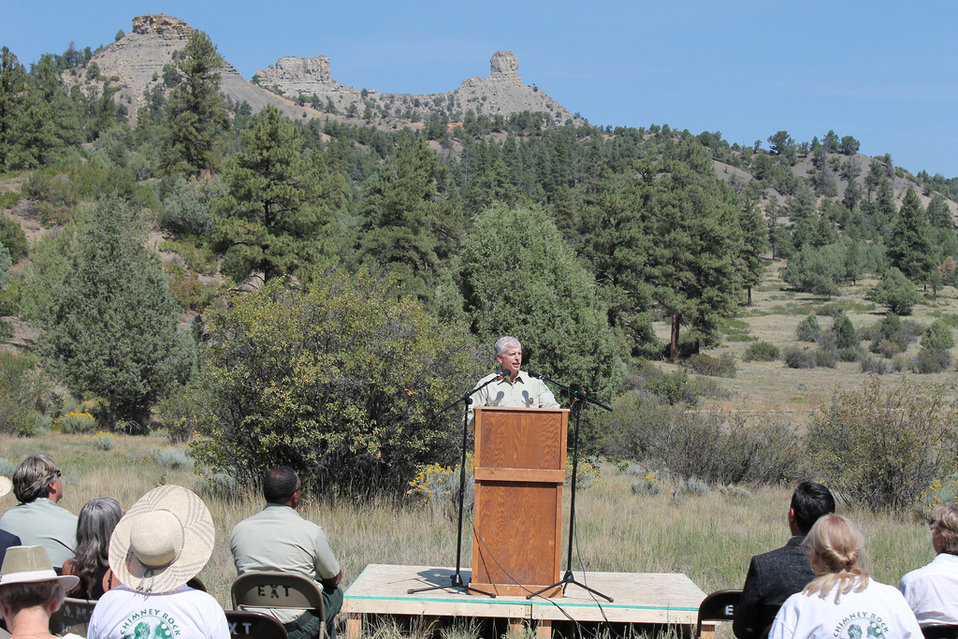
U.S. Department of Agriculture (USDA) Forest Service Chief Tom Tidwell speaks at the dedication of Chimney Rock as a National Monument in the San Juan National Forest in Southwest Colorado on Friday, Sept. 21, 2012. Chimney Rock is of great spiritual importance to Pueblos and other Tribes in the southwest corner of Colorado. With its twin sandstone pillars and its massive Chaco- style masonry walls perched 1,000 feet above the Piedra River Valley the monument protects a landscape important to the continuation of traditional cultural practices of the modern Puebloan Indians.